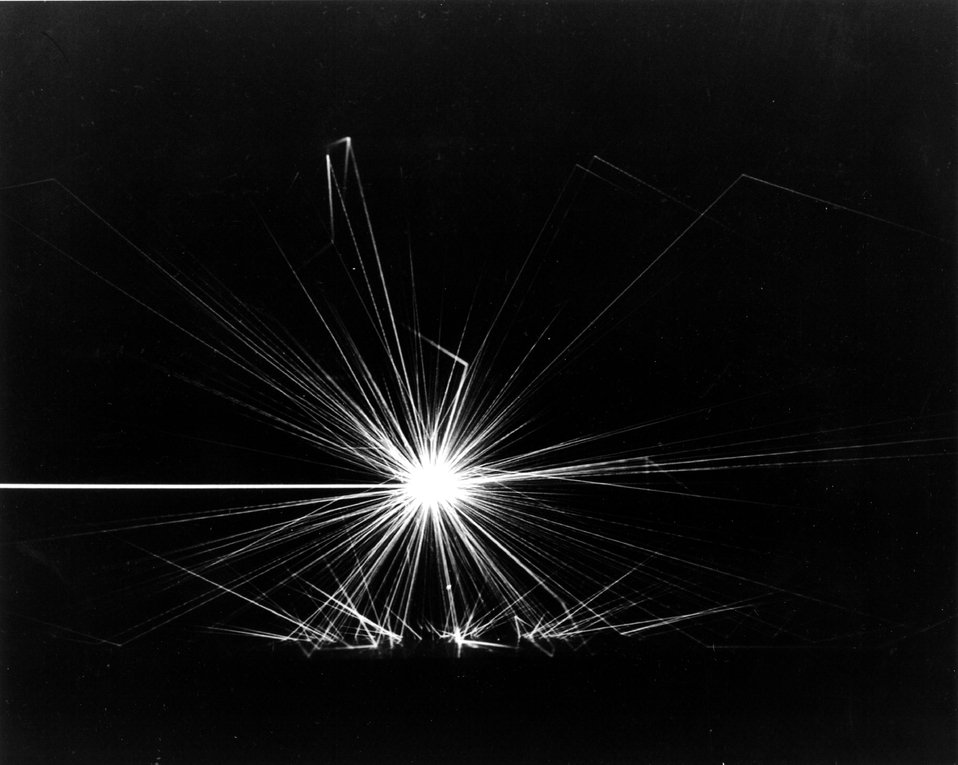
As part of a study of the consequences of re-entry of a nuclear space propulsion system into the earth's atmosphere at high velocity, experiments are being conducted on the combustion of droplets of liquid metal in air. c. 1964